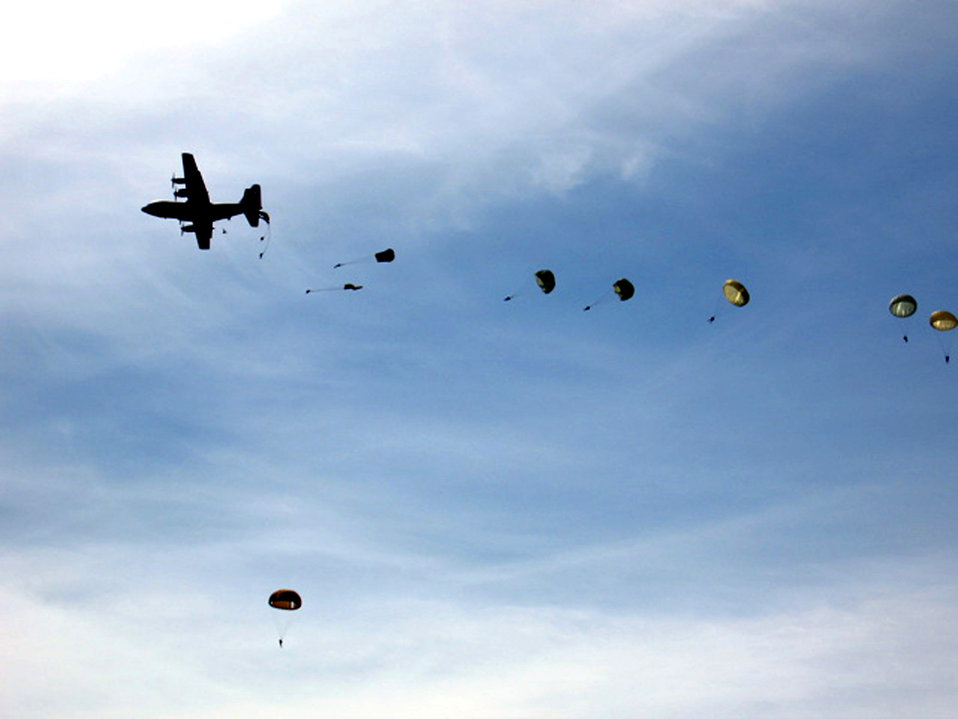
Parachute drop brings appreciation for freedom

Paratroopers jump out of a C-130 Hercules as part of observances for the 62nd anniversary of D-Day in Normandy, France, on June 4. The paratroopers were a combined force from the U.S., Canada, France, Britain and Germany participating in Operation Airdrop Warrior 2006. The airdrop was held two days before the actual anniversary.